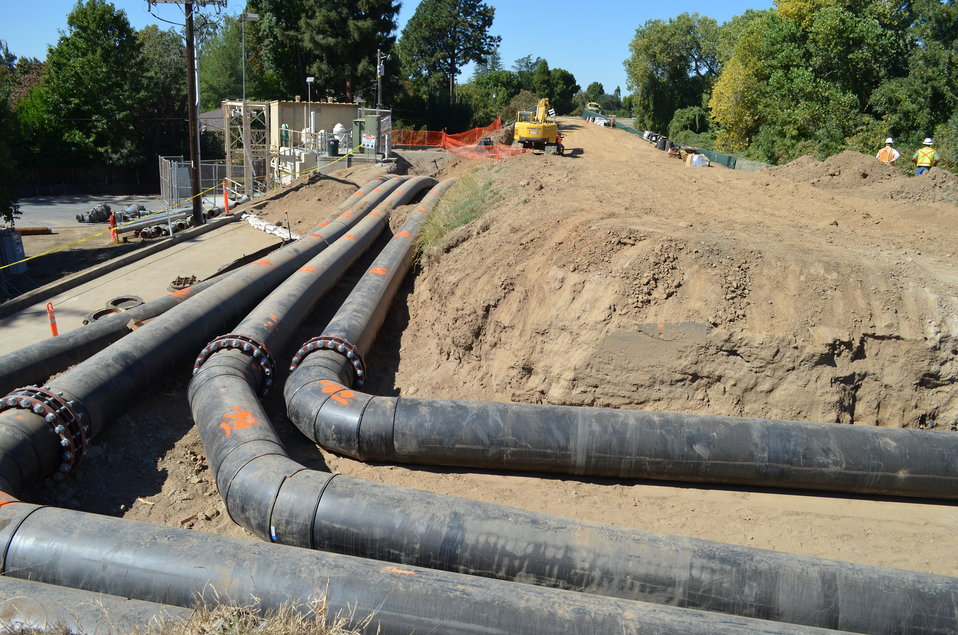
Temporary sump station piping is in place, shown Oct. 2, 2013, and ready to pump storm waters from the low-lying River Park neighborhood of Sacramento, Calif., into the American River. The U.S. Army Corps of Engineers Sacramento District expects to reopen this levee section to the public in November and will return next summer to complete installation of a seepage wall running underneath the sump station's piping. The district built more than 20 miles of seepage cutoff walls into American River levees between 2000 and 2002, but work was set aside for later where construction was complicated by encroachments like utilities, power lines, bridges and sump stations.